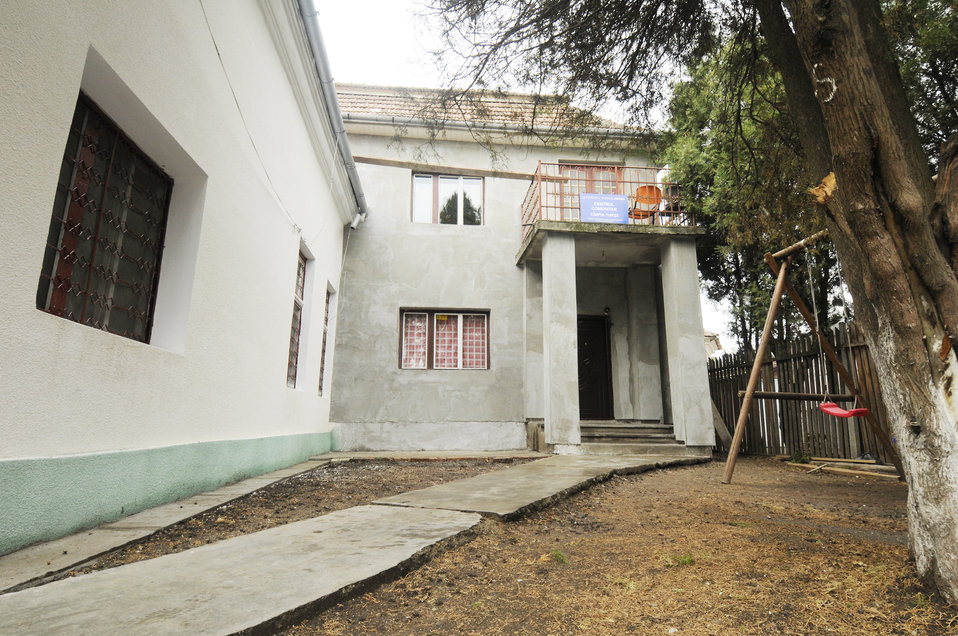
Spangdahlem Airmen reach out to Romanian community

Members of Spangdahlem Air Base, Germany, donated money and time to help refurbish a children's community center during their deployment in support of Operation Dacian Thunder 2009 Oct. 26, 2009, in Turda, Romania. The center provides academic help to about 50 local children after school to ensure they graduate.